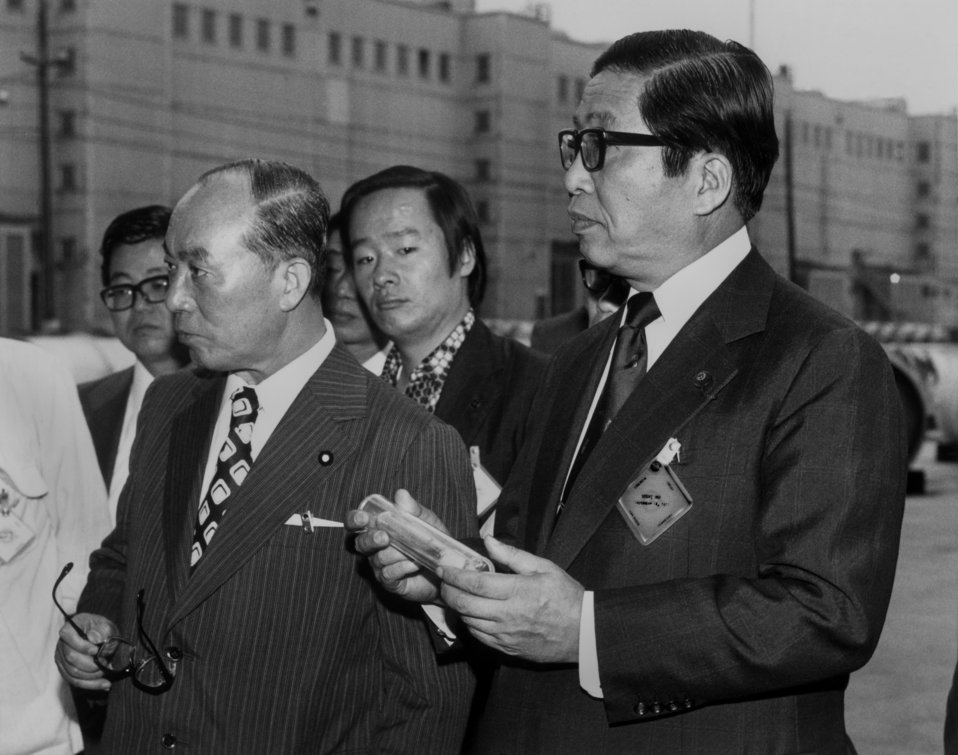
Japanese visit to Energy Research and Development Administration Oak Ridge

77-393 DOE photo Frank Hoffman

Japanese visit to Energy Research and Development Administration Oak Ridge Tennessee 9-14-1977